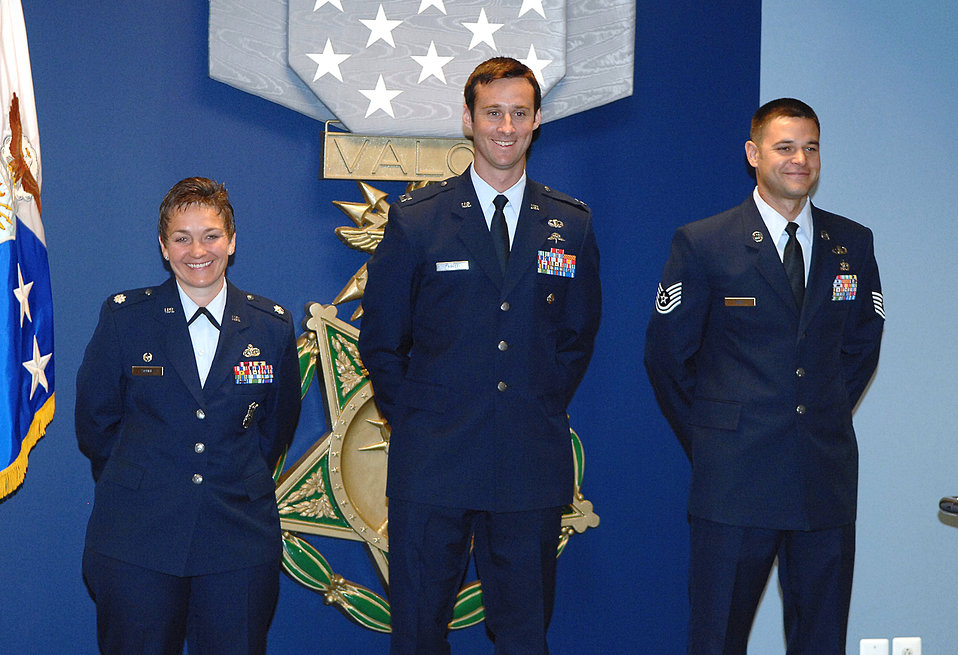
Airmen receive Sijan leadership award

Lt. Col. Laura A. Soule, Capt. Stewart J. Parker, Master Sgt. William F. Facio (not pictured) and Tech. Sgt. Joshua D. King received the Lance P. Sijan Air Force Leadership Award during a ceremony Aug. 20 at the Pentagon. The Sijan Award recognizes Airmen who demonstrated outstanding leadership while assigned to an organization at the wing level or below.